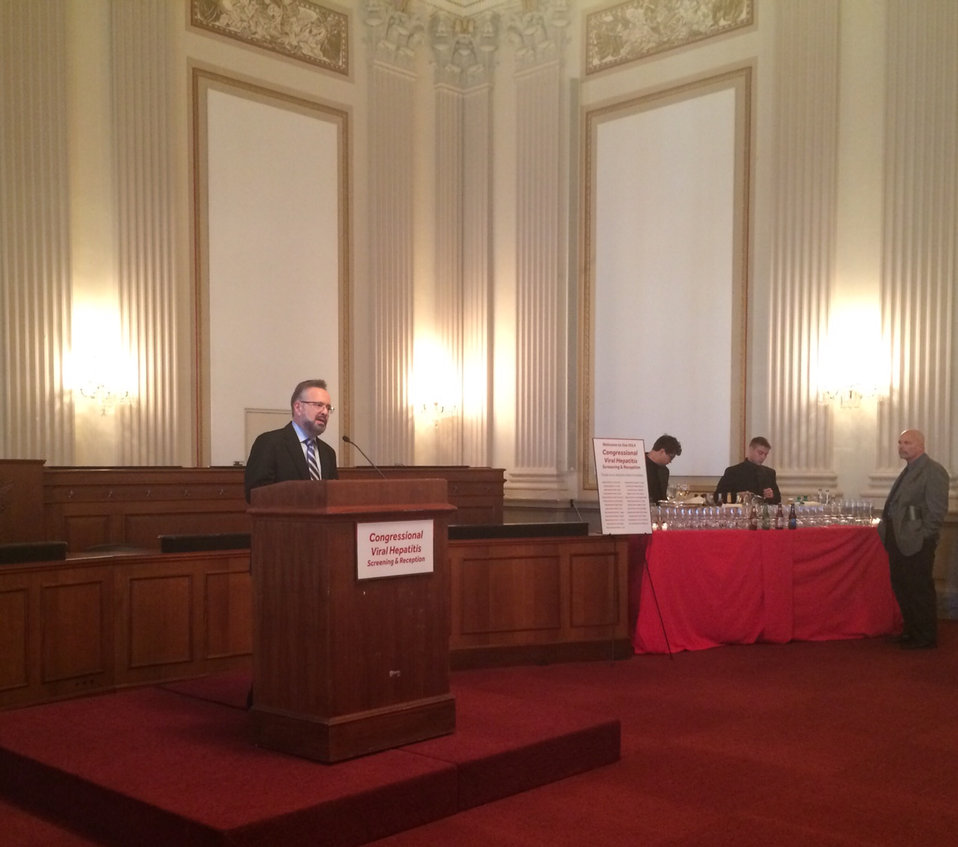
14 0519 HepTestingDay-4